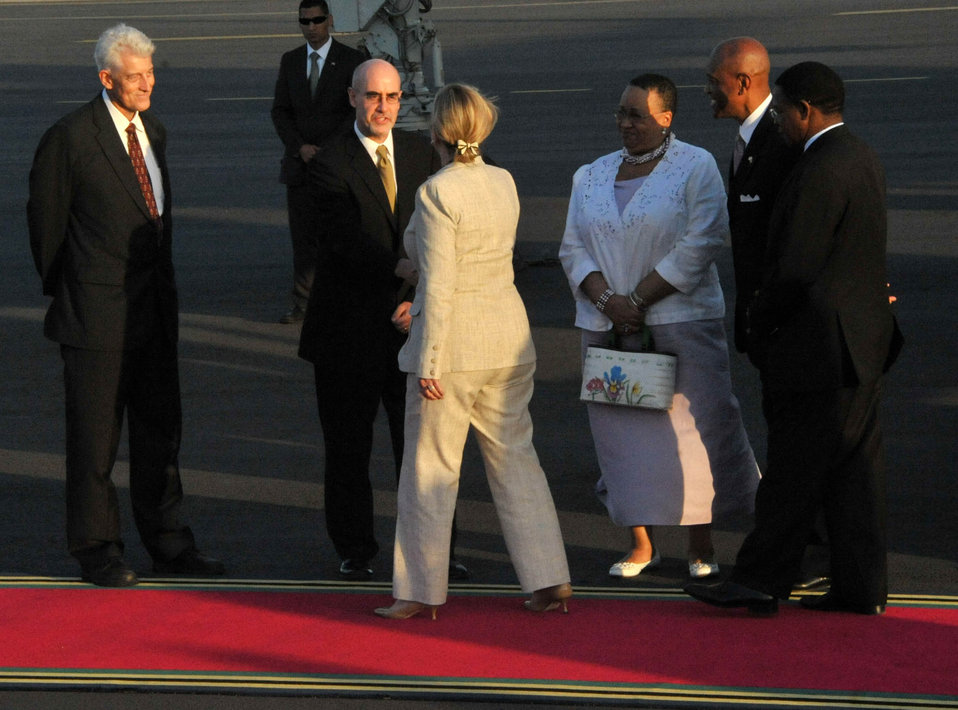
Secretary Clinton Is Greeted By Deputy Chief of Mission Scott

U.S. Secretary of State Hillary Rodham Clinton is greeted by U.S. Embassy in Dar es Salaam, Tanzania, Deputy Chief of Mission Robert K. Scott upon her arrival at the Julius Nyerere International Airport in Dar es Salaam, Tanzania, on June 11, 2011. Jacqueline Lenhardt, wife of U.S. Ambassador to Tanzania Alfonso E. Lenhardt, right of Deputy Chief of Mission Scott; and Ambassador Lenhardt, right of Mrs. Lenhardt; are also pictured in the photo.